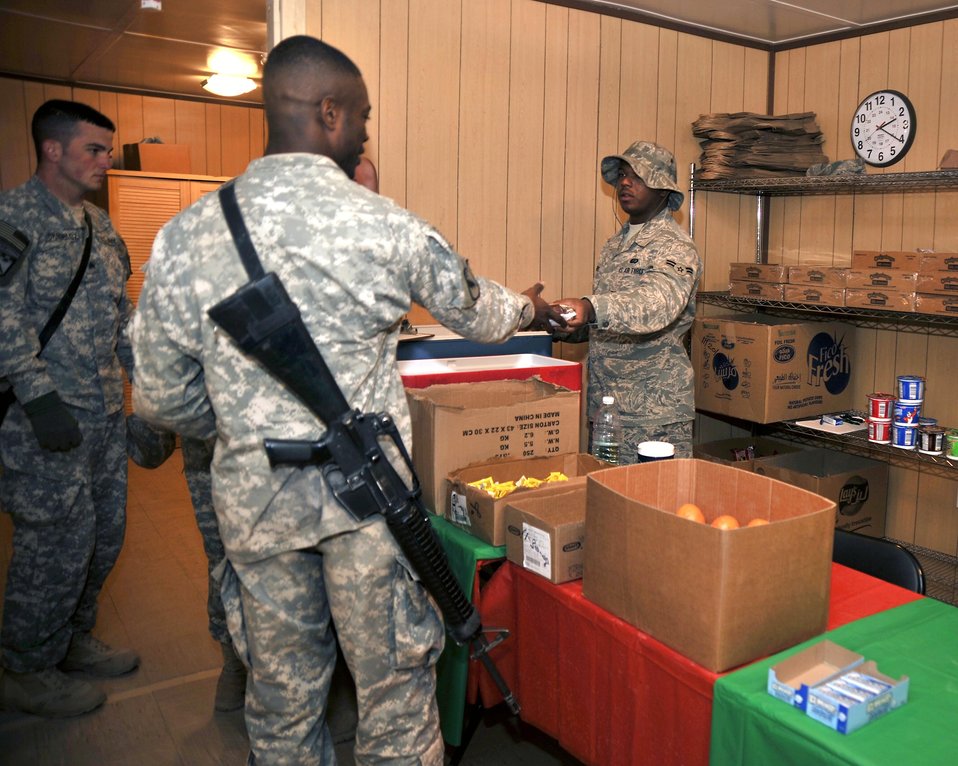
Sather Airmen work late to feed the force

Airman 1st Class Justin Harris serves sandwiches and other snacks to servicemembers awaiting flights at Sather Air Base, Iraq. Airman Harris is a food services journeyman assigned to the 447th Expeditionary Force Support Squadron and is deployed from the 100th Force Support Squadron, RAF Mildenhall, England.